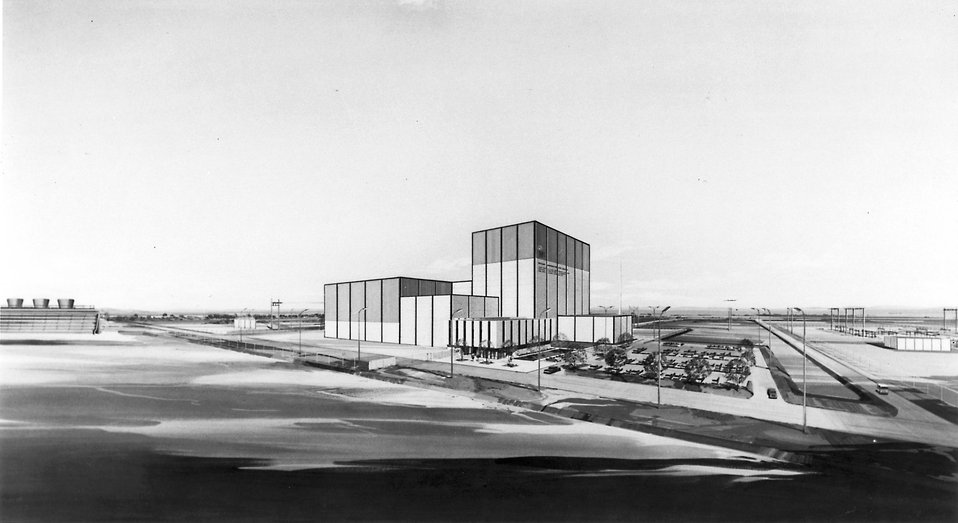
Artist conception of the Duane Arnold Energy Center near Palo, Iowa. Circa 1974.